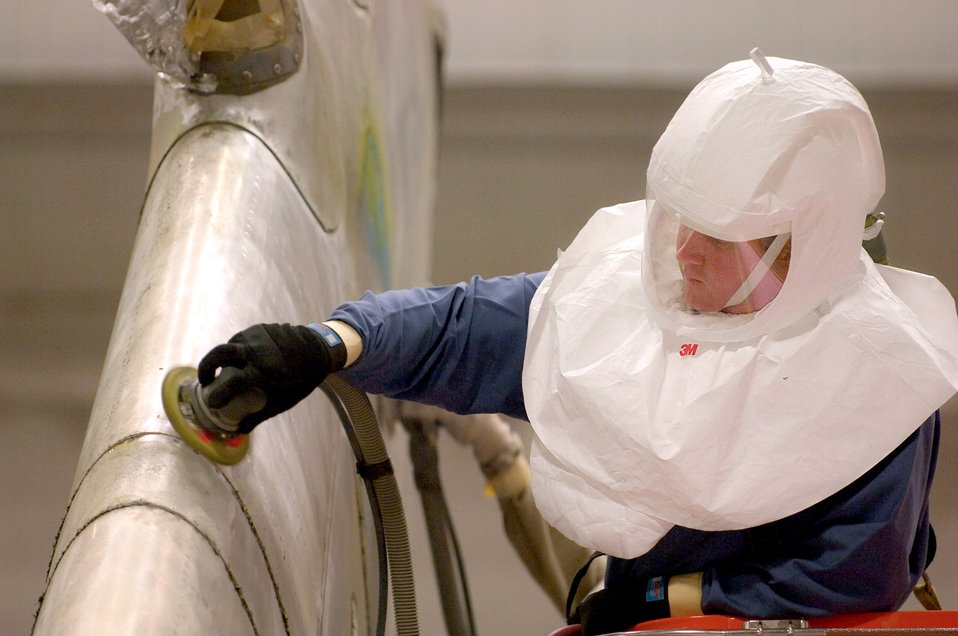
24-hour Tinkering: Maintenance around the clock

Anthony Hunt scuff sands a KC-10 Extender while 60-feet high in the Corrosion Control Facility Hangar Oct. 2 at Tinker Air Force Base, Okla. Aircraft are worked non-stop by each shift as they are depainted, prepared and repainted by crews of the 76th Aircraft Maintenance Group.